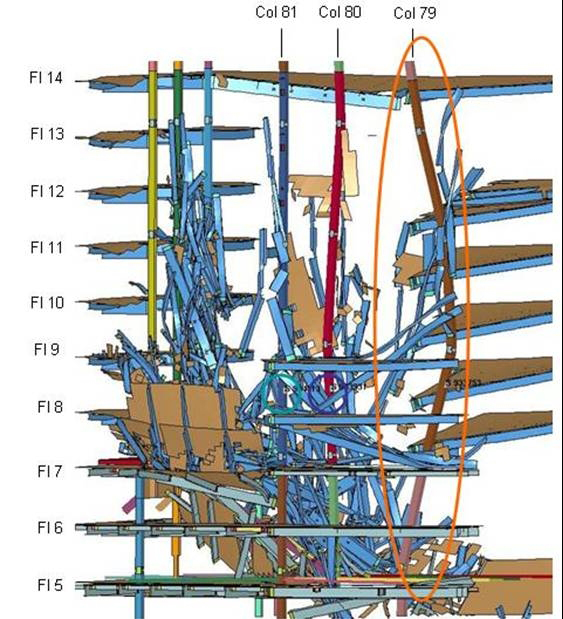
Buckling of WTC7 Column 79

Graphic showing the buckling of WTC 7 Column 79 (circled area), the local failure identified as the initiating event in the building's progressive collapse.